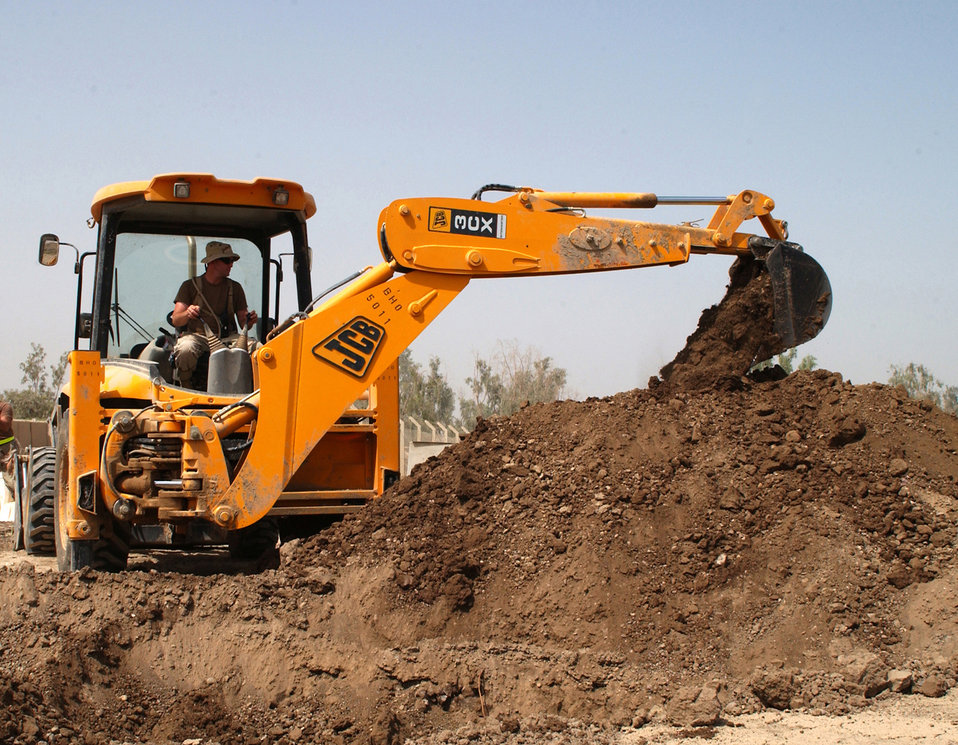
Airmen, Soldiers open lines of communication

BAGHDAD, Iraq -- Senior Airman Dennis Knaack uses a backhoe to dig a trench for new ductwork that will house fiber optics cable here. Airman Knaack is assigned to the 447th Expeditionary Communications Squadron and is deployed from the Minnesota Air National Guard's 210th Engineering and Installation Squadron.